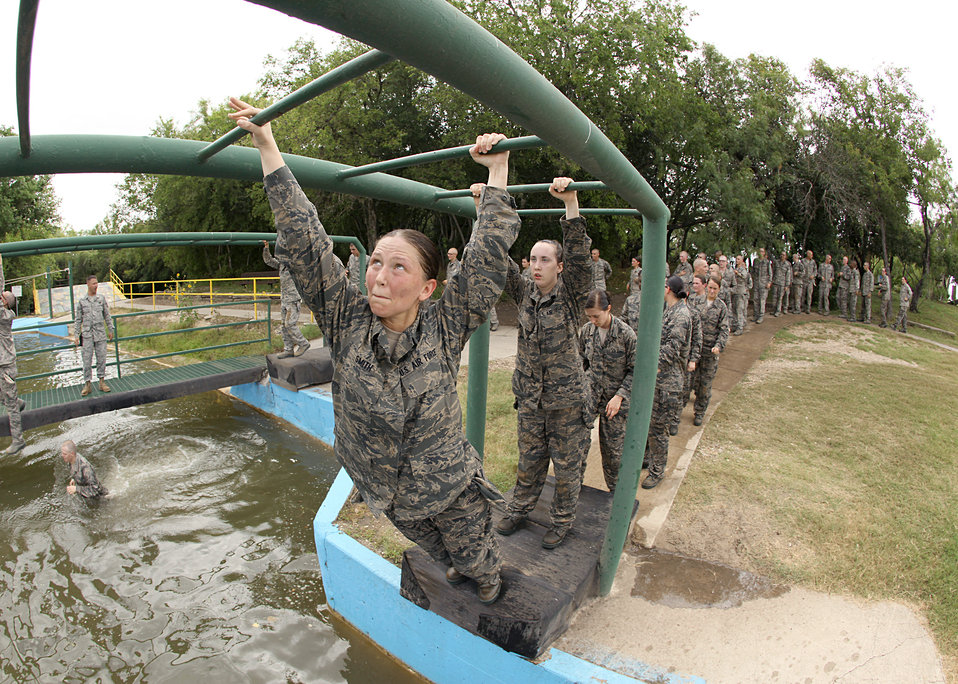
I'm not falling in the water

Air Force Basic Military Training trainees begin the monkey bars obstacle June 30, 2010, at the confidence course at Lackland Air Force Base, Texas. In BMT, trainees learn the critical importance of discipline, teamwork and foundational knowledge needed to succeed as an Airman.